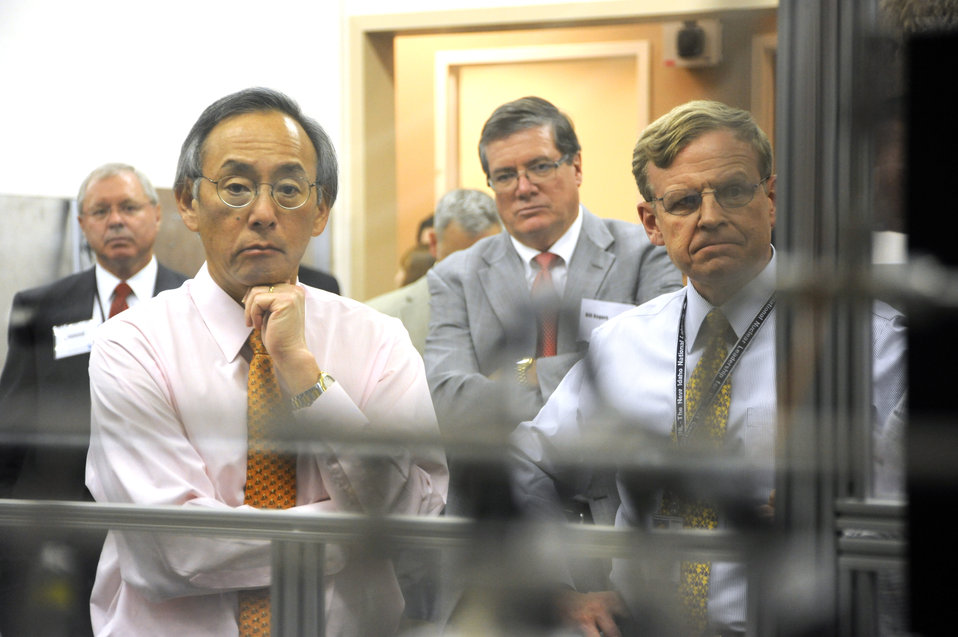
Energy Secretary Steven Chu and John Grossenbacher, Director of Idaho National Laboratory, observe the lab's Hybrid Energy Systems Test Bed (HYTEST) infrastructure during IRC campus tour.